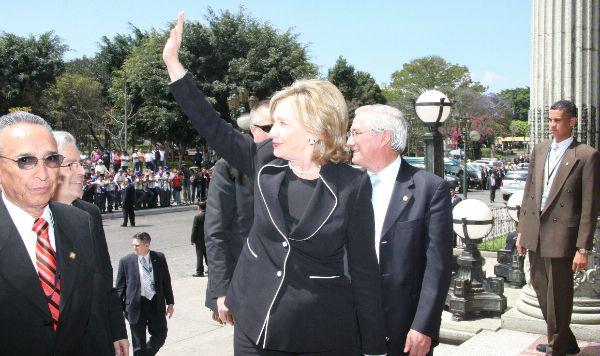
Secretary Clinton Waves to the Crowd

U.S. Secretary of State Hillary Rodham Clinton waves to the crowd outside the National Palace of Culture in Guatemala City, Guatemala, March 5, 2010.